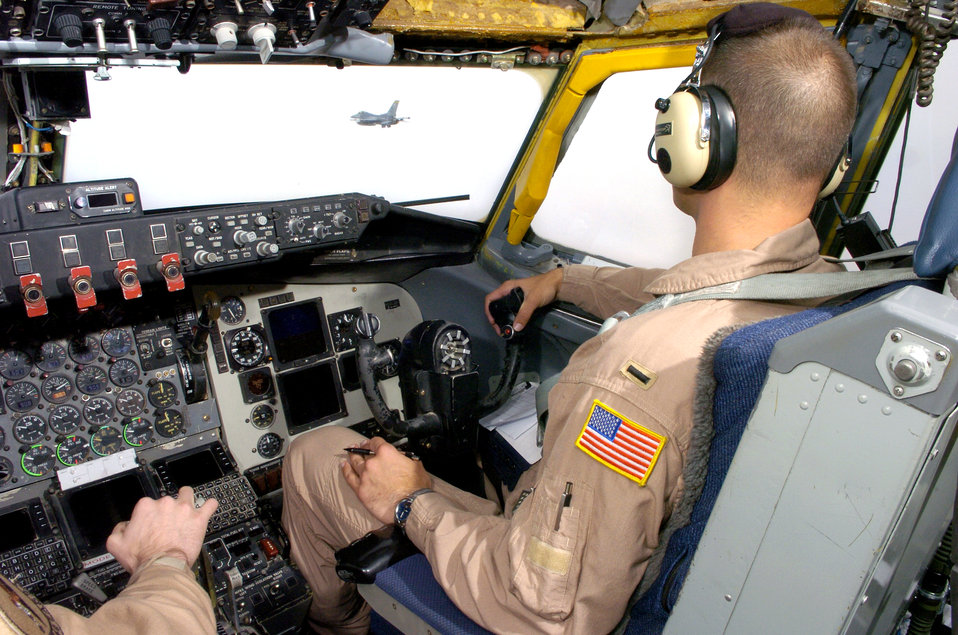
Close-air-support mission

An F-16 Fighting Falcon flies past the window of 1st Lt. Justin Hargrove on Sunday, May 7, 2006, over Iraq. After refueling with the KC-135 Stratotanker, the F-16 continued its close-air-support mission over Iraq. Lieutenant Hargrove is deployed to the 340th Expeditionary Air Refueling Squadron in Southwest Asia from McConnell Air Force Base, Kan.